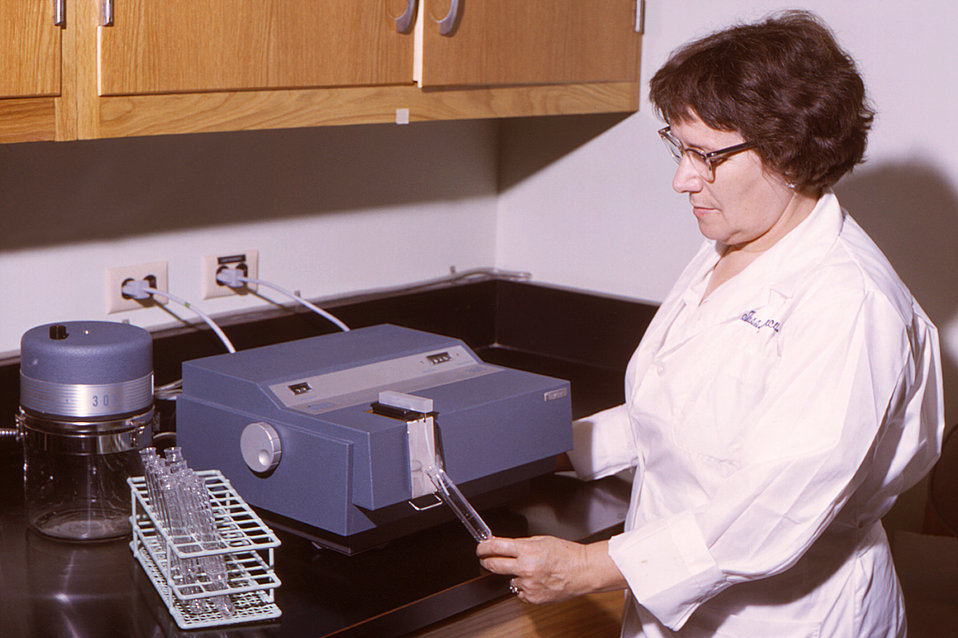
This historic 1965 photograph depicted a laboratory technician as she was performing a spectrophotometric analysis using a Gilford spectrophotometer.